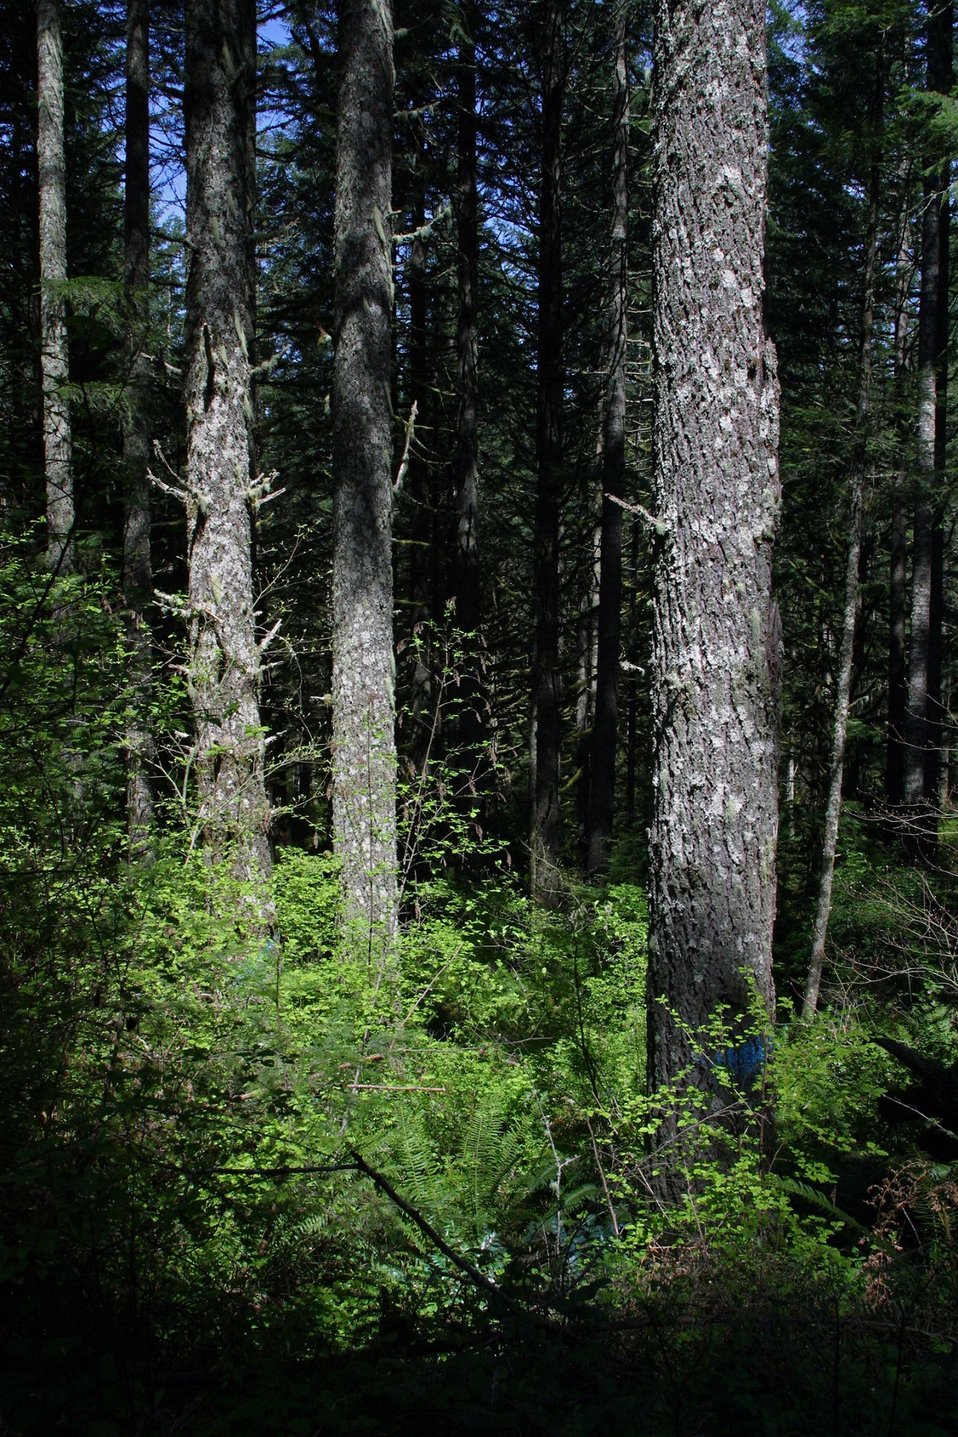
BLM forest lands in the Santiam watershed.